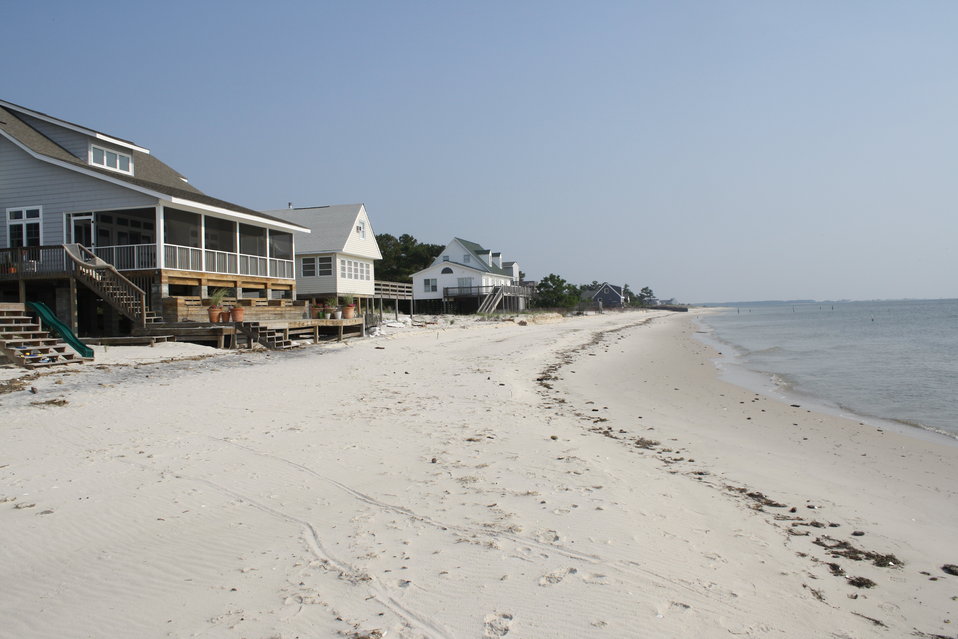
Bavon Beach project

The Service’s Virginia Field Office has worked with Bavon Beach property owners and other partners to develop and fund the construction of a breakwater system with beach and dune replenishment and restoration.